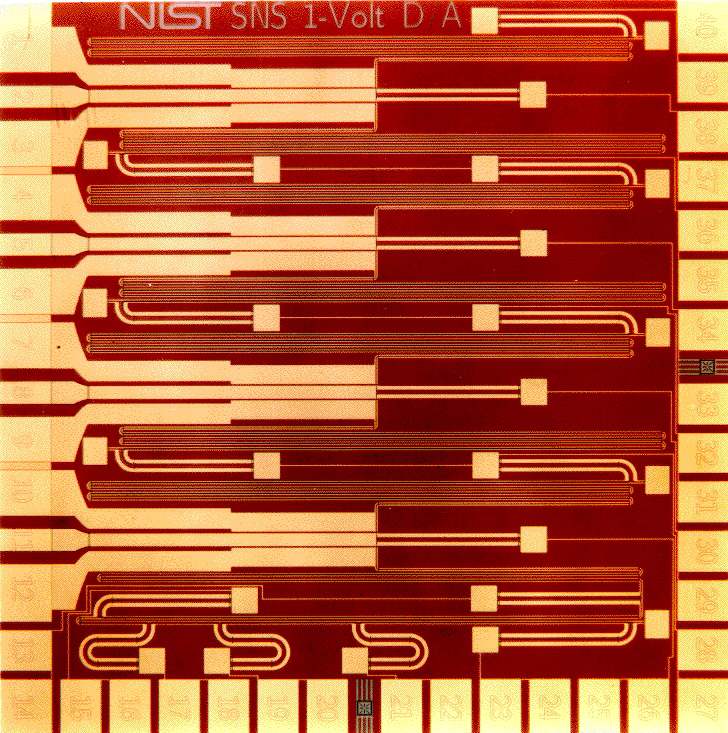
1997--First programmable 1-volt standard

NIST made the first programmable 1-volt standard, which had 32,768 junctions on a 1-centimeter square chip. This was the first demonstration of the new normal-metal junction barrier technology that produced large numbers of junctions with uniform electrical characteristics, even though each junction is only 2 micrometers by 2 micrometers in size. Programmable arrays are ideal for automated measurement systems. The stability of the programmable steps enabled the first detailed characterization of voltmeters.